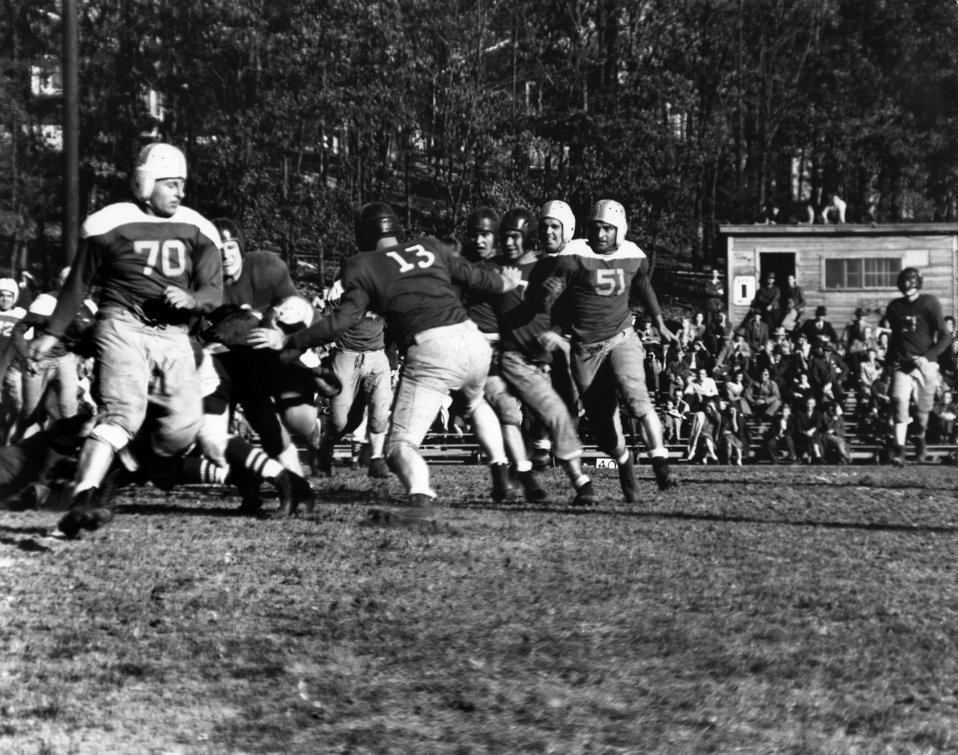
Football MP's vs Air Base from Nashville Moore General Hospital

DOE photo Ed Westcott 11-12-1944 Oak Ridge Tennessee